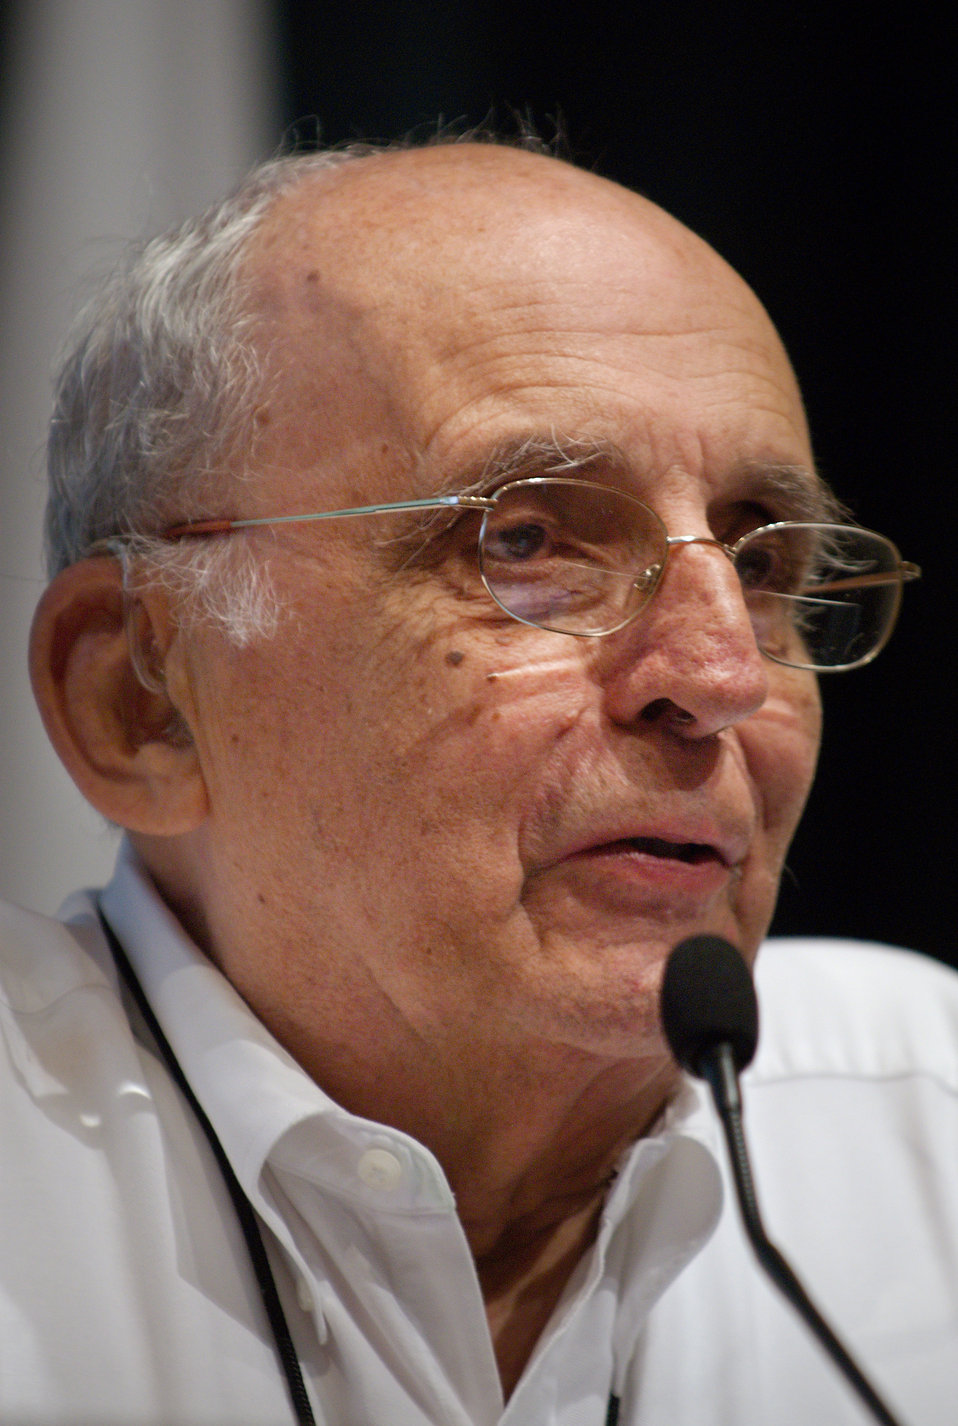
In this 2008 photograph depicted former Centers for Disease Control Director, Dr. David J. Sencer at a podium, as he was speaking during a CDC Smallpox Reunion, held in Atlanta, Georgia. It was during Dr. Sencer's watch that bold efforts to fight smallpox on a global scale, lead to its official Worldwide eradication in 1980.